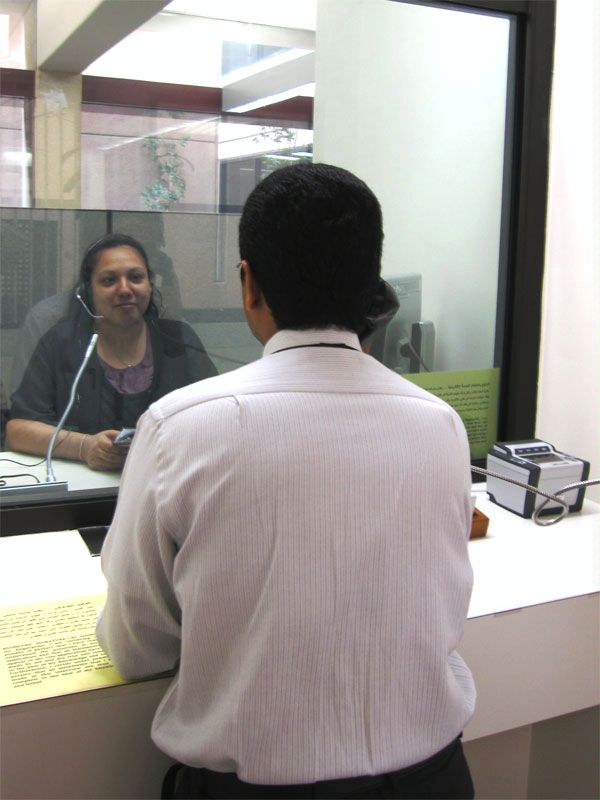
U.S. Embassy Riyadh Employees Chat

Vice Consul Kim Perez meets with the visa assistant after a long day of visa interviews in Riyadh, Saudi Arabia, April 19, 2010.